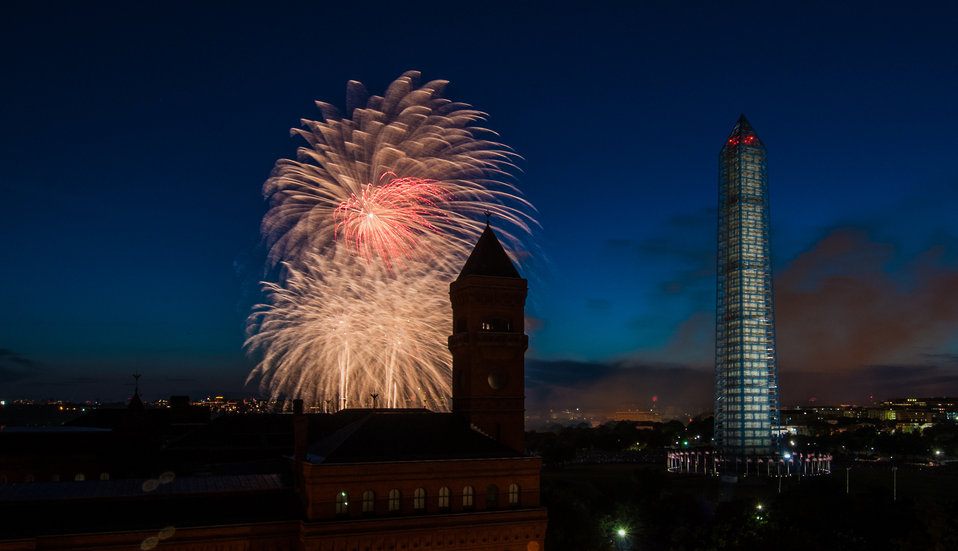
4th of July fireworks as seen from the U.S. Department of Agriculture (USDA) headquarters building, with the USDA Forest Service Yates Building in the foreground, left, and the Washington Monument in Washington, D.C., on July 4, 2013.